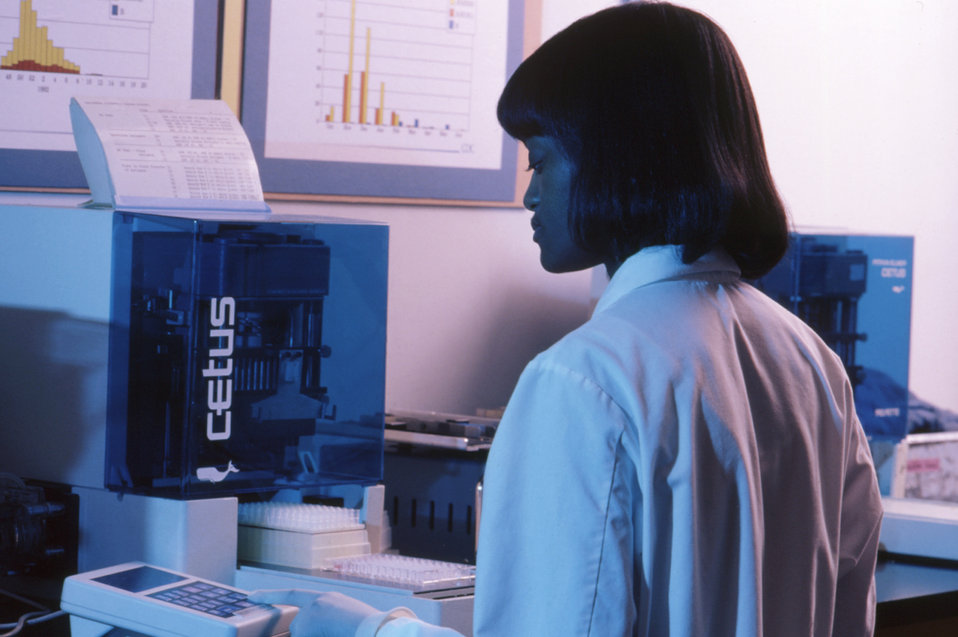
This 1980's photograph shows a CDC laboratory technician collecting scientific data using a Cetus ProPette.